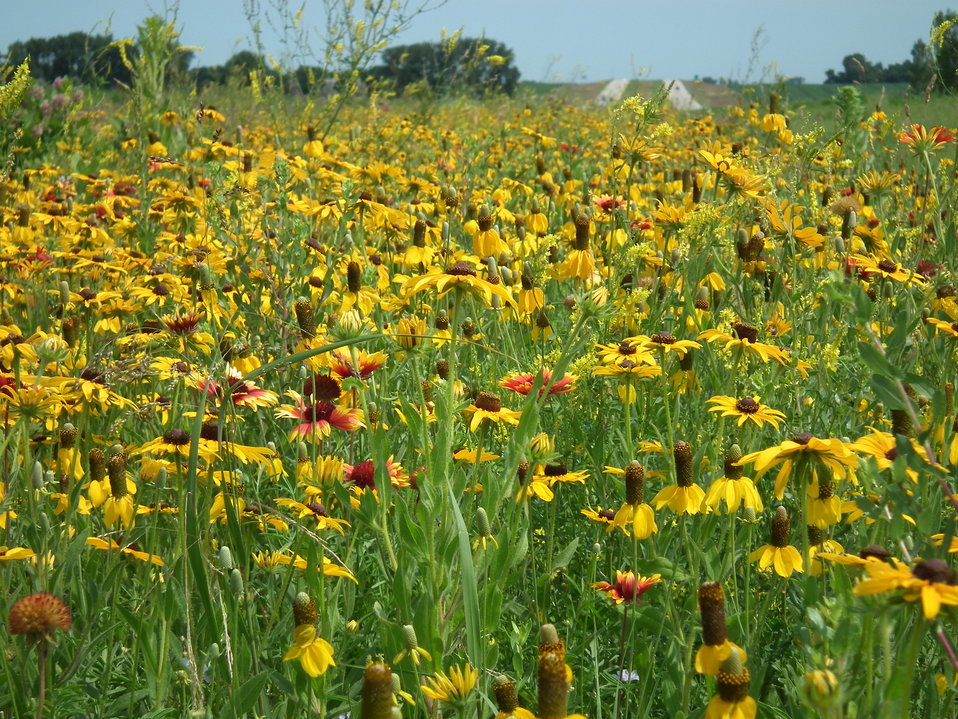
I-29 planting SD (1)

The U.S. Department of Agriculture (USDA) Natural Resources Conservation Service (NRCS) in South Dakota office planted a seed mix that included nine native wildflowers and three native prairie grasses along the Interstate 29 median that borders North Dakota.